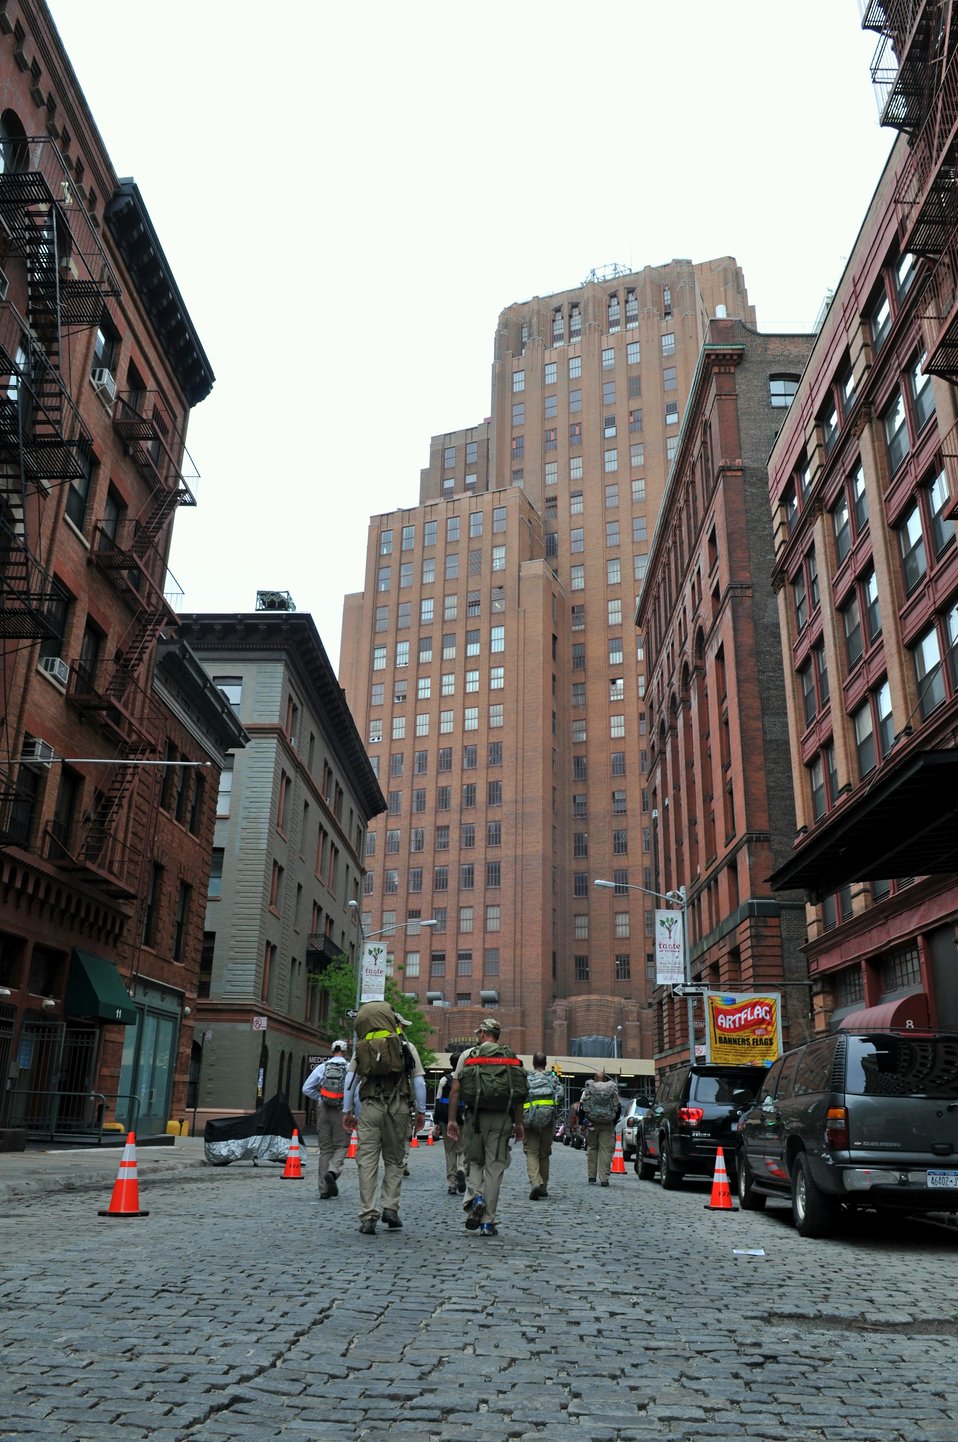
Airmen remember fallen air advisors

Team 1 of the Air Advisor Memorial Ruck March makes their way through New York City on April 26, 2012. The approximately 90-mile march, which started at the One World Trade Center and ended at the Air Advisor Academy, was in remembrance of the deaths of nine U.S. air advisors in Afghanistan.